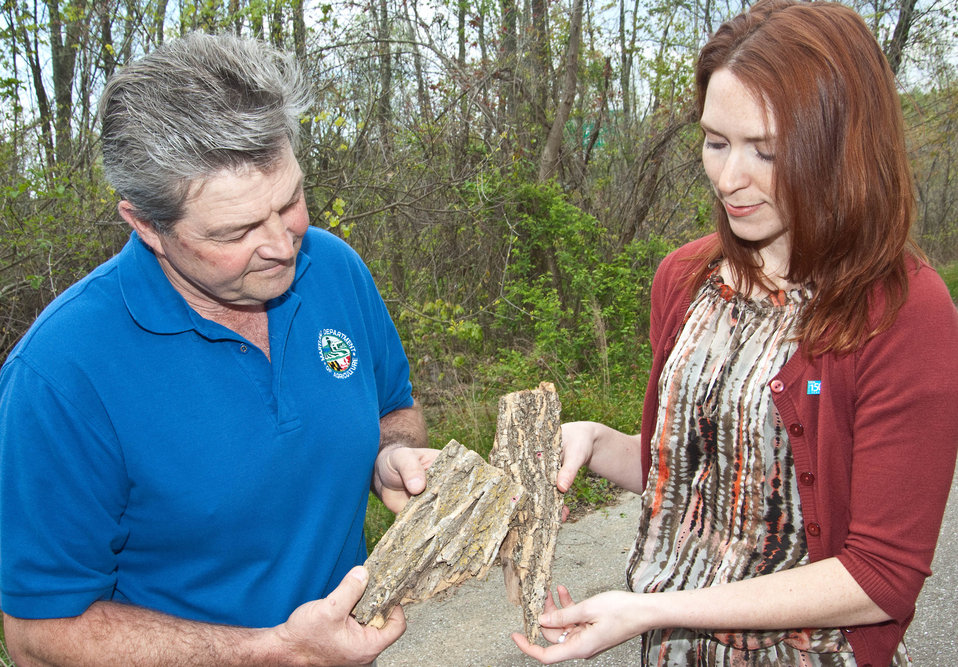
Agriculture Deputy Under Secretary for Marketing and Regulatory Programs Rebecca Blue and Maryland Agriculture Secretary Bubby Hance show the damage Emerald ash borer can do to the trees of Patuxent Wetlands Park in Anne Arundel County, MD, on Tuesday, April 10, 2012.